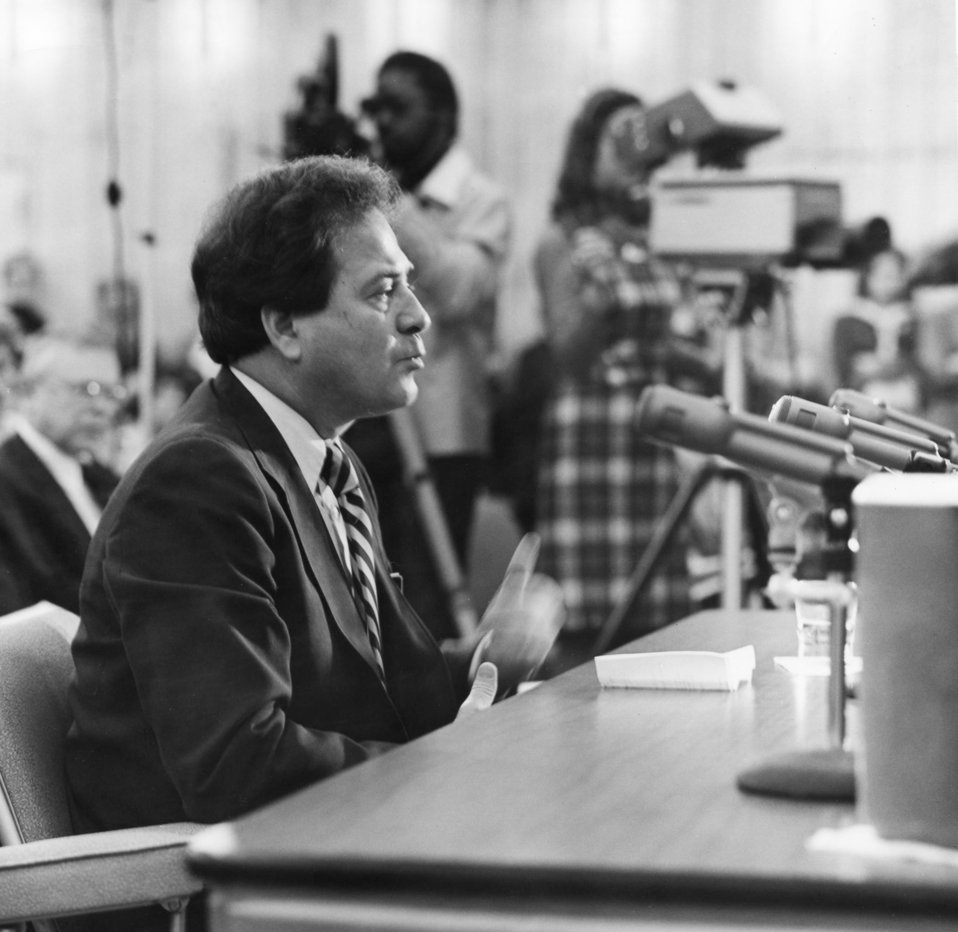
This was Elliot Levitas, Representative from Georgia, photographed while participating in a senate hearing on the Centers for Disease Control's handling of the 1976 Legionnaires' disease outbreak.